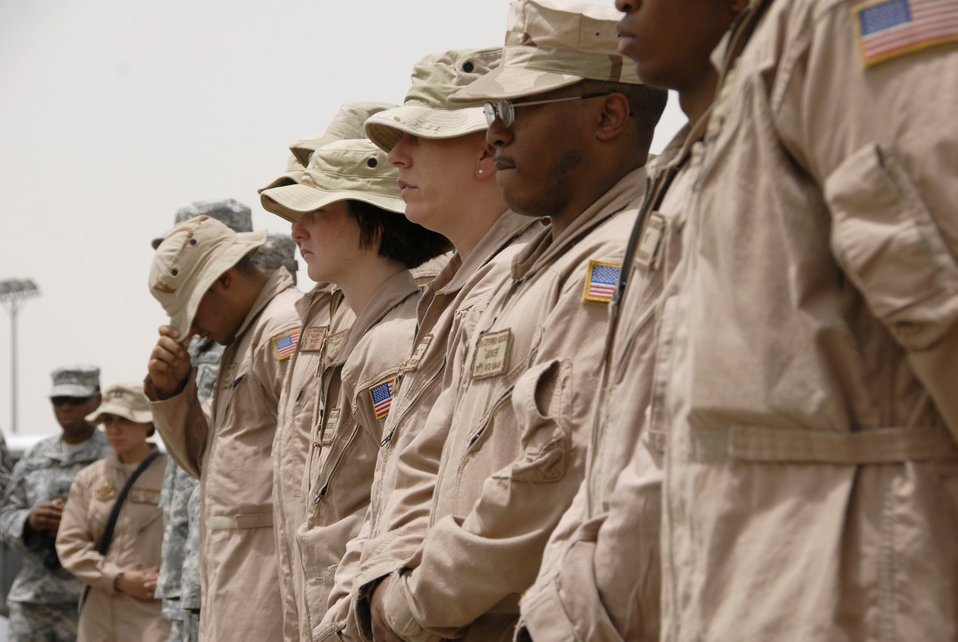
In his honor: Street named for Airmen killed in action

Airmen from the 586th Expeditionary Logistics Readiness Squadron, 70th and 424th Medium Truck detachments, and Soldiers from the Army's 1st Theater Support Command, 640th Sustainment Brigade, 1144th Transportation Battalion, along with other Airmen from the 386th Air Expeditionary Wing, listen to a guest speaker during a street dedication ceremony June 10 in Southwest Asia. The ceremony is a tribute to Airman 1st Class Eric Barnes, 20, of Lorain, Ohio, who died June 10, 2007, as a result of an improved explosive device attack on an Air Force convoy about 100 miles south of Baghdad, Iraq. He was deployed from the 90th Logistics Readiness Squadron at F.E. Warren Air Force Base, Wyo.